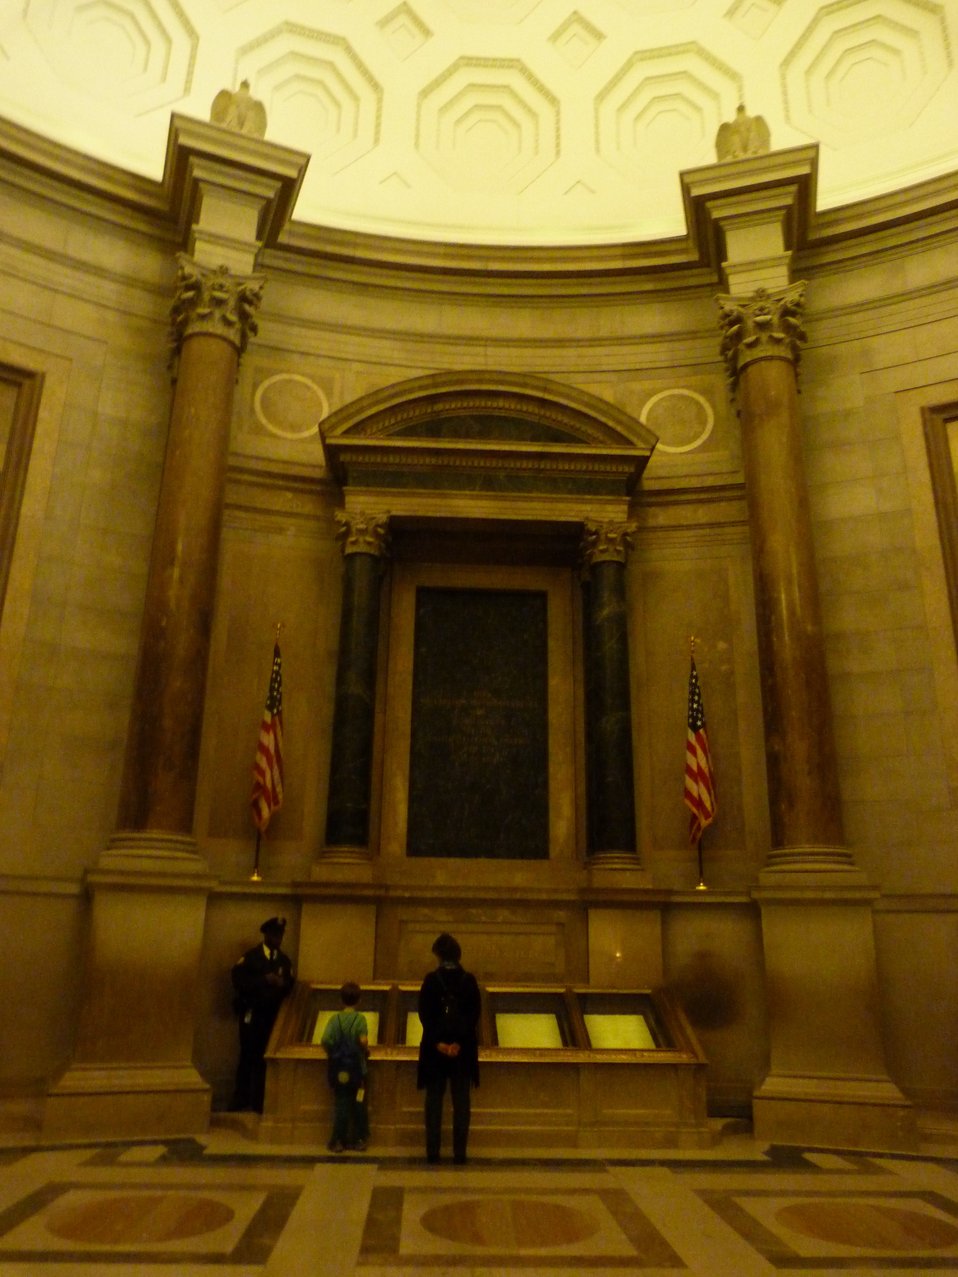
Rotunda Sleepover

Rotunda Sleepoverr; Photo provided by The Foundation for the National Archives